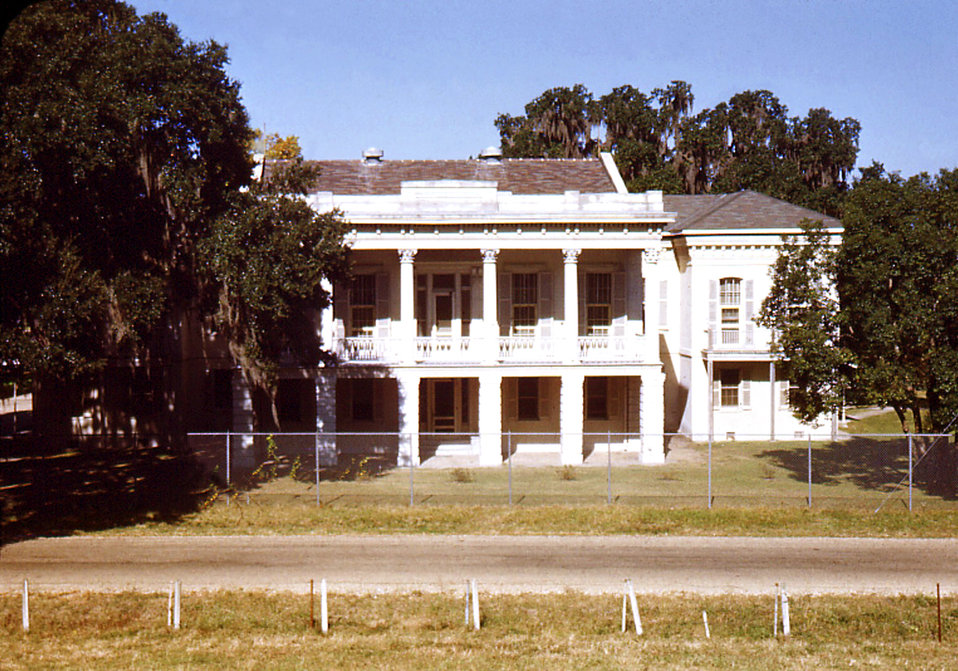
This photograph depicted the Carville, Louisiana Leprosarium's Administration Building, where all new patients that had entered the facility were compelled to surrender their baggage for an inspection. Guns, knives, and weapons in general were not permitted on the facility grounds."Patients of the U.S. Marine Hospital in Carville, Louisiana, produced a set of 35 mm slides around 1950 from which this image was derived. In 2002, a patient's son donated the set, the only one known in existence, to the museum. The father, a patient at Carville for several years, brought these slides home around 1950 to give his family a snapshot of life at the national leprosarium. The act of quarantining patients for leprosy (HD) remained law in the state of Louisiana until 1957."